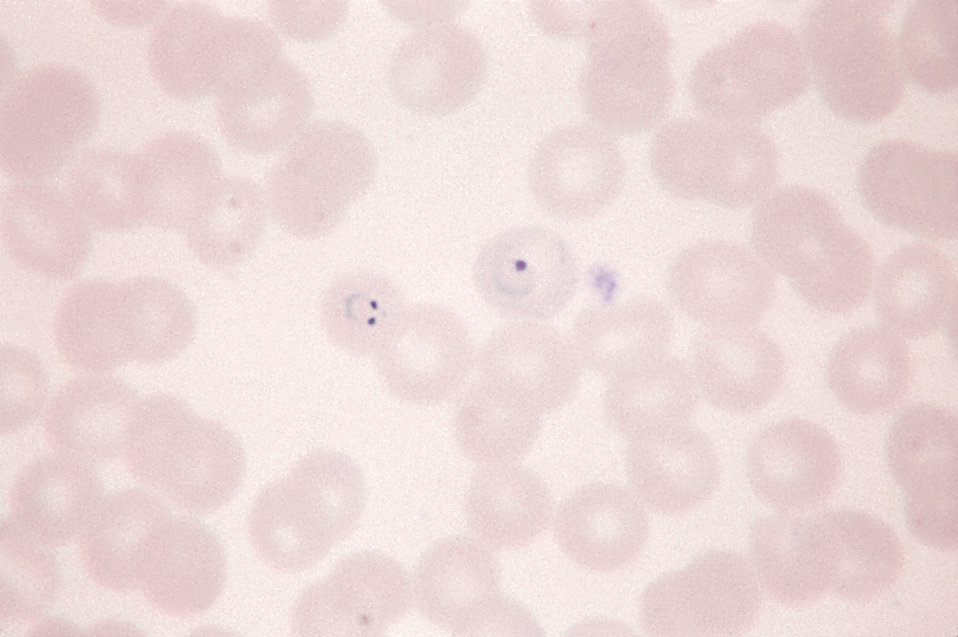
This thin film micrograph reveals two P. vivax rings, each bearing different morphological characteristics; Mag. 1125X.